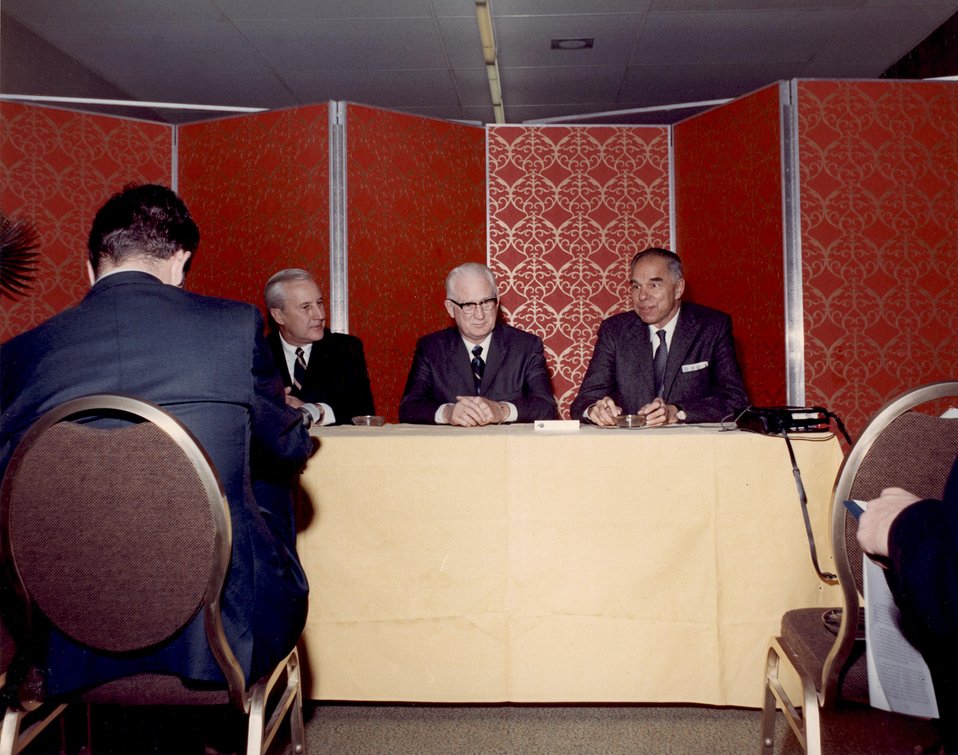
Fermi Award. Recipient: Walter Zinn. Date: Dec 2, 1970.